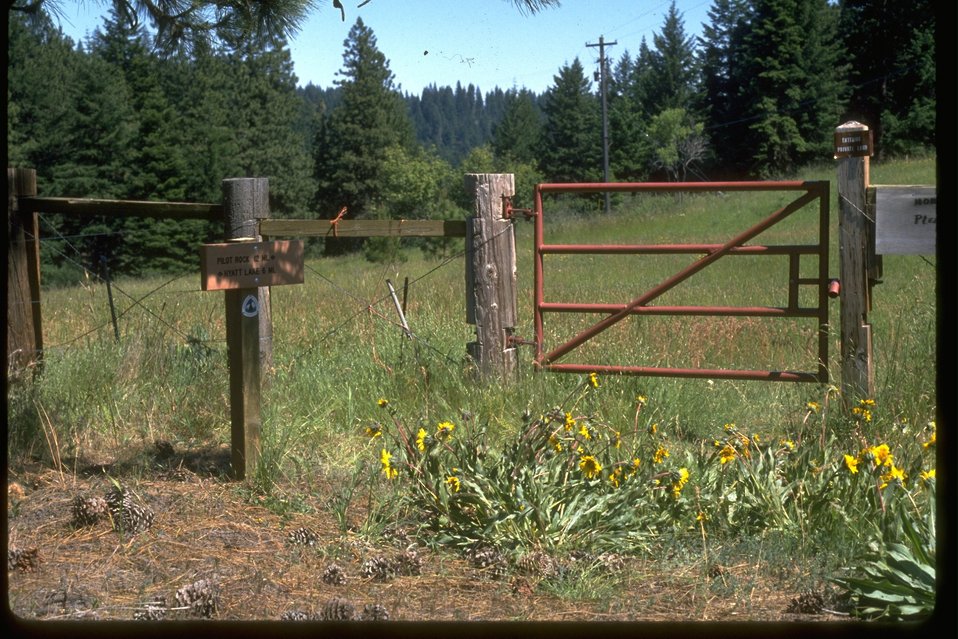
A fence along the Pacific Crest Trail.